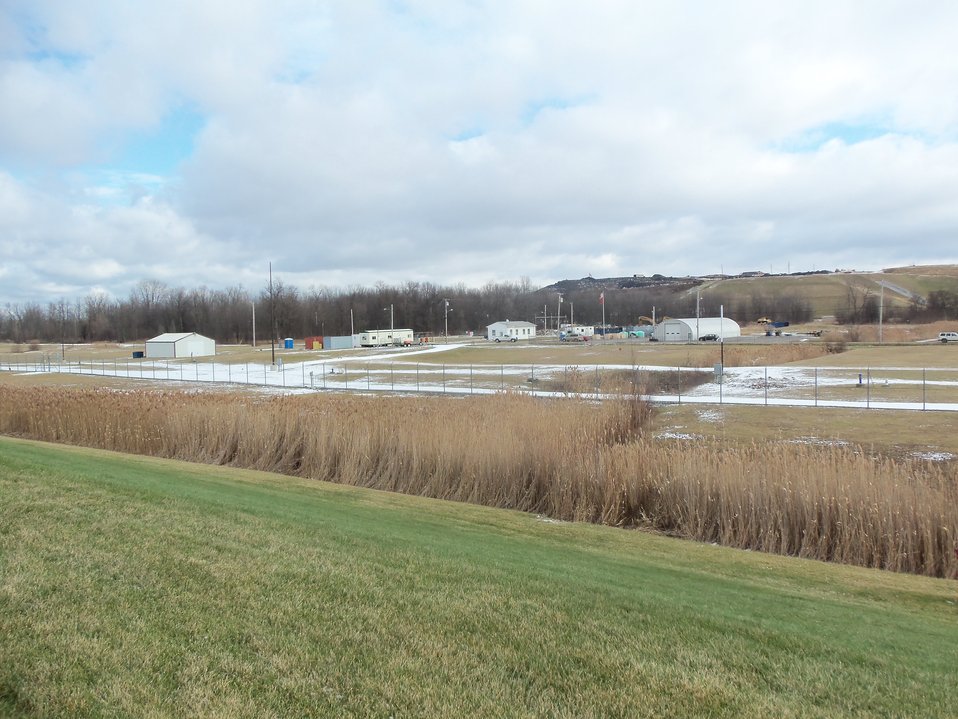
PHOTO OF AREA BUILDING 401 FROM CAP

Activities from the Niagara Falls Storage Site, which is associated with the former Lake Ontario Ordnance Works. Formerly Utilized Sites Remedial Action Program (FUSRAP), a program initiated in 1974 to identify, investigate and clean up or control sites that were part of the Nation's early atomic energy and weapons program. Activities at the sites that are eligible for FUSRAP were conducted by Manhattan Engineer District (MED) or the Atomic Energy Commission (AEC), both predecessors of the Department of Energy (DOE). The U.S. Army Corps of Engineers was assigned management of FUSRAP by Congress in 1997.